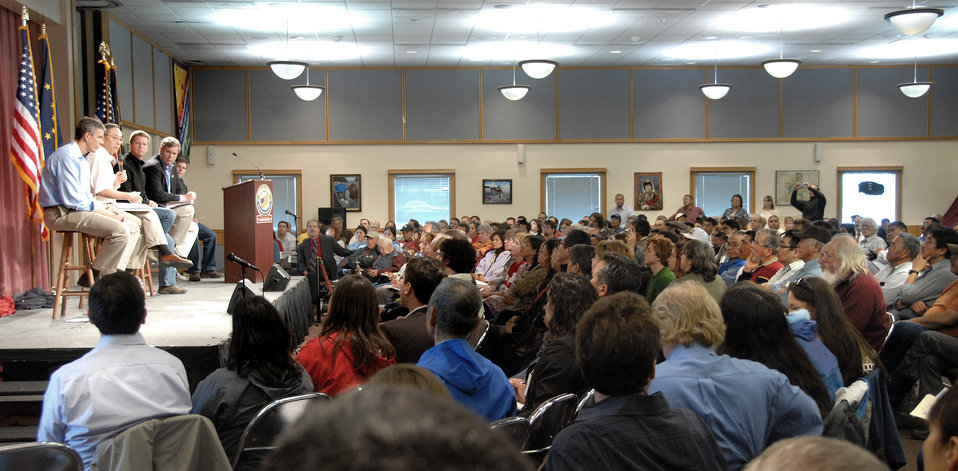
Rural Tour 0135

Rural Tour Alaska Aug 2009